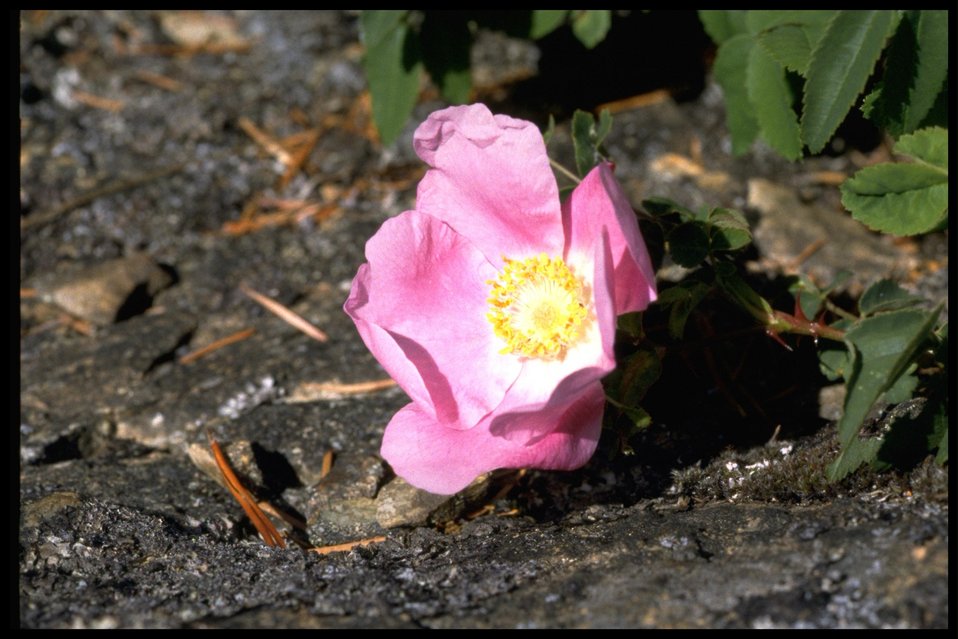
Small Pink wildflower at Point Colville.